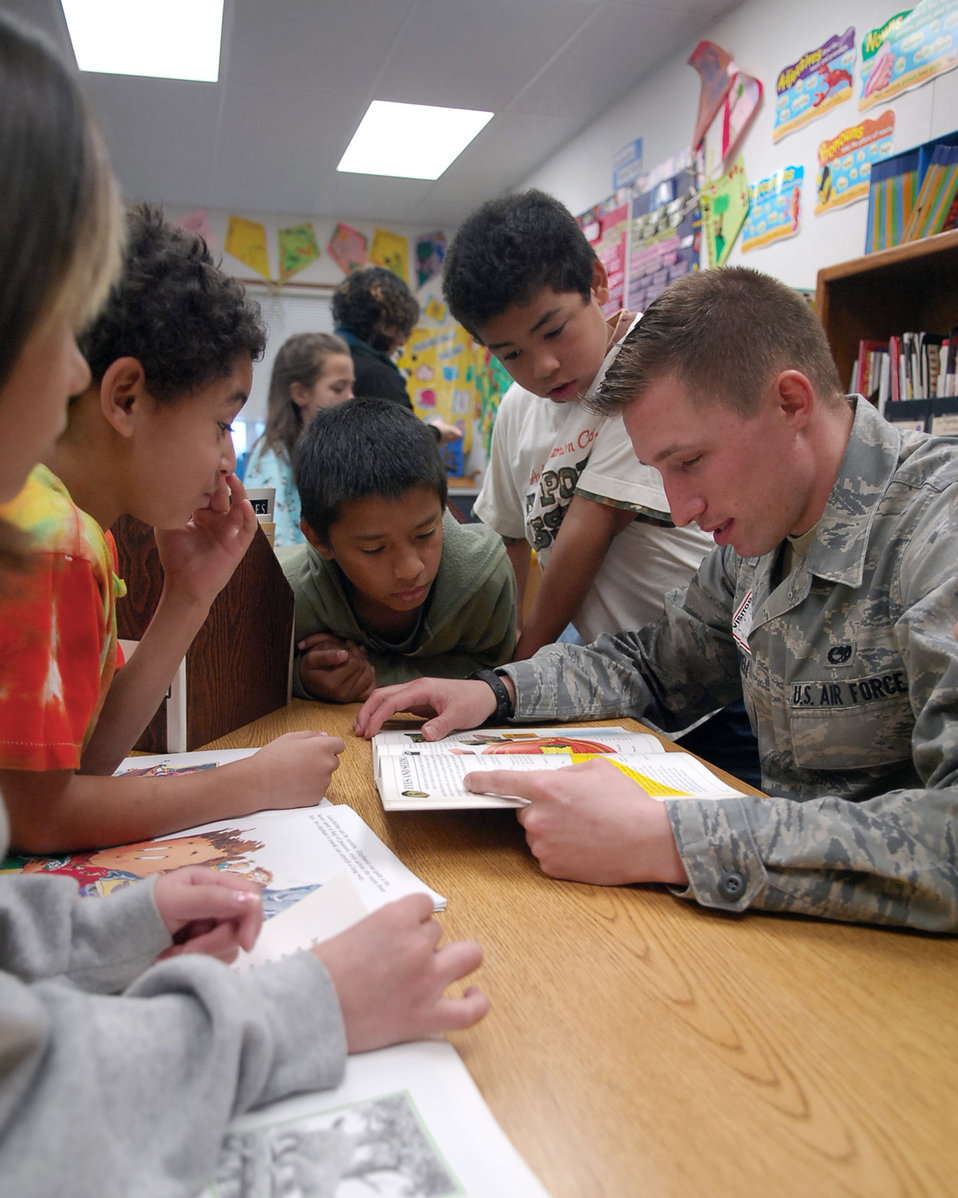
Beale Airmen 'Read Across America'

Airman 1st Class Christopher McDowell a book as children listen attentively at Arboga Elementary School, March 2. Airman McDowell is from the 9th Communication Squadron.